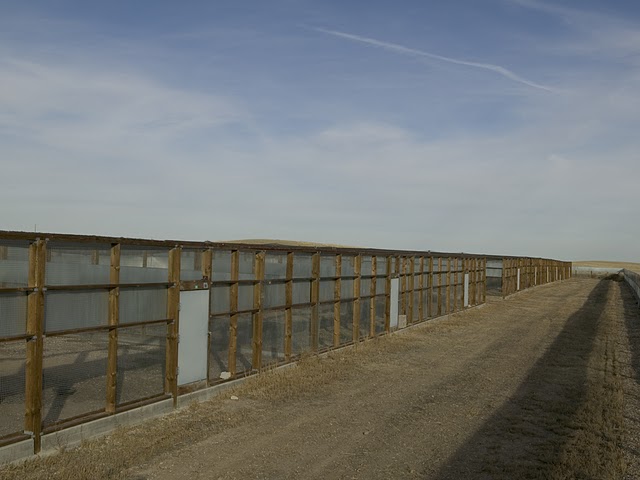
National Black-footed Ferret Conservation Center